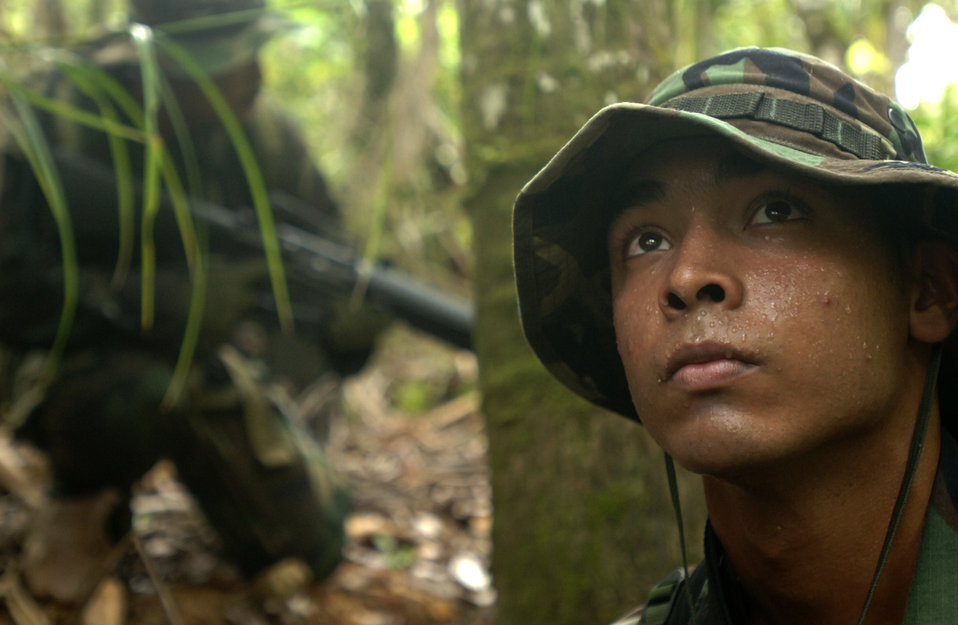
Jungle heat

ANDERSEN AIR FORCE BASE, Guam -- Airman Javier Fuello takes a moment to get his bearing during a patrolling exercise in the jungle here. Airman Fuello is participating in the special response team course used to train security forces in close combat, specialized weapons, building clearing techniques and military operations on urbanized terrain. Airman Fuello is assigned to the 613th Contingency Response Group.